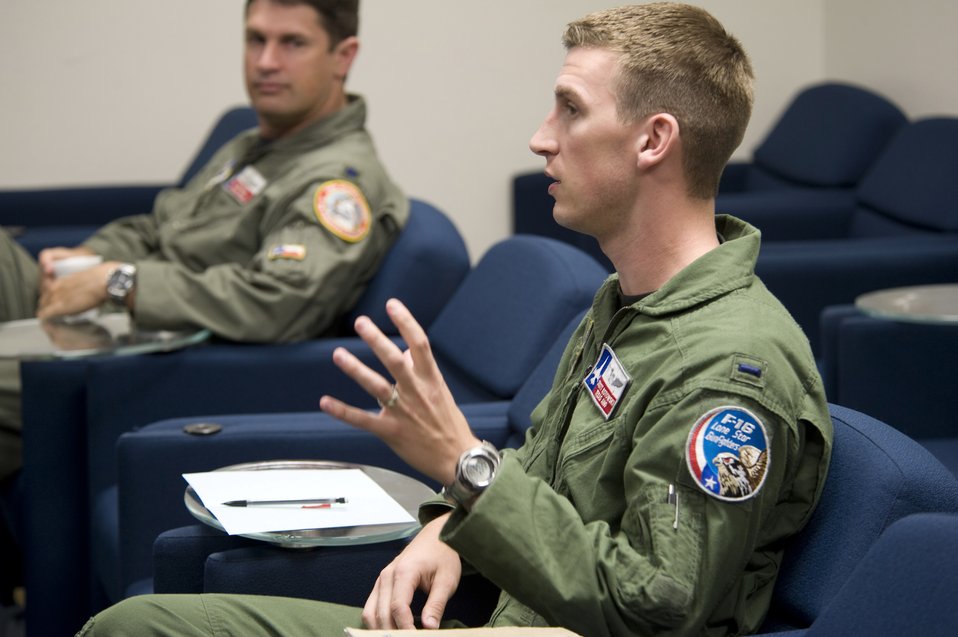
Airmen train next generation

1st Lt. Scott Kotowski (front) answers questions about safety procedures during a mass brief April 23 at Davis Monthan Air Force Base, Ariz. He is one of nine active-duty student pilots participating in Exercise Coronet Cactus. Lieutenant Kotowski is assigned to the 149th Fighter Wing in San Antonio.